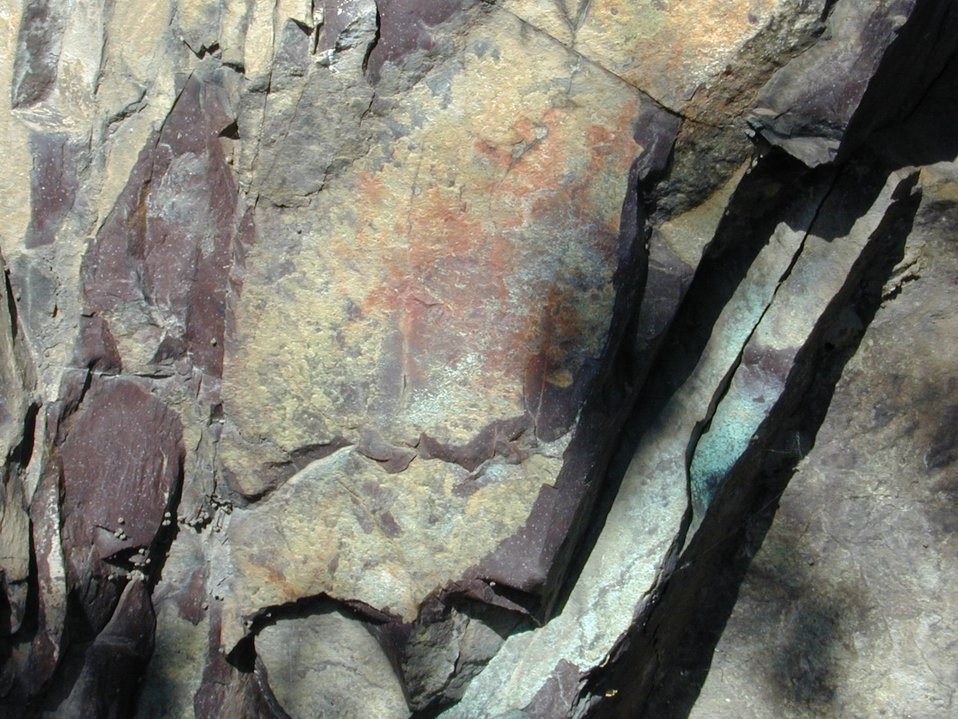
Cultural resources Petroglyphs on Lower Salmon River Cottonwood Field Office UCSC Upper Columbia Salmon Clearwater District